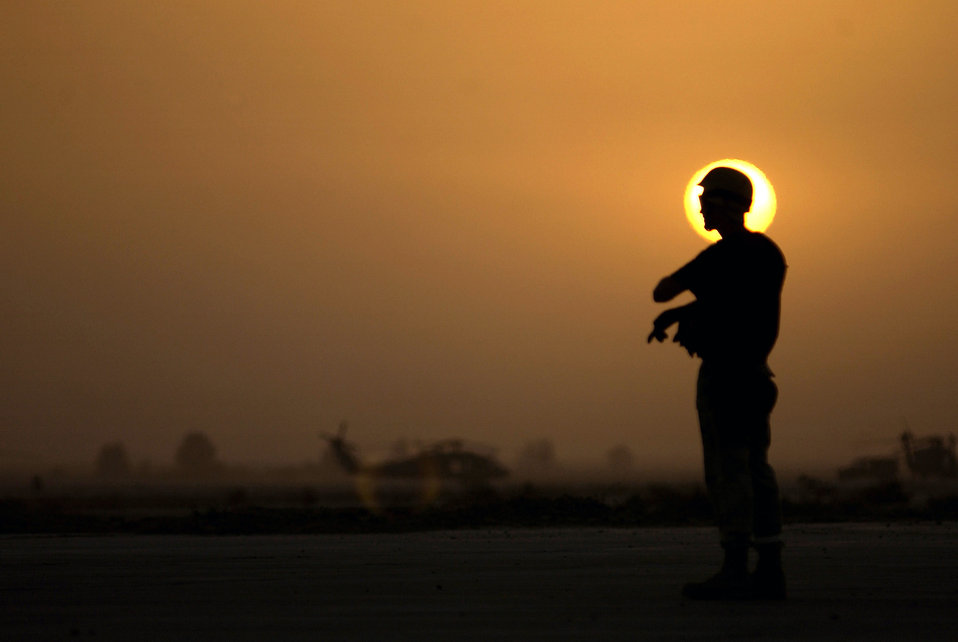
Not alone

Co-workers and peers are in the best position to identify when someone is struggling. Having the courage to reach out to another Airman who is having a difficult time is the first and most critical step toward suicide prevention.